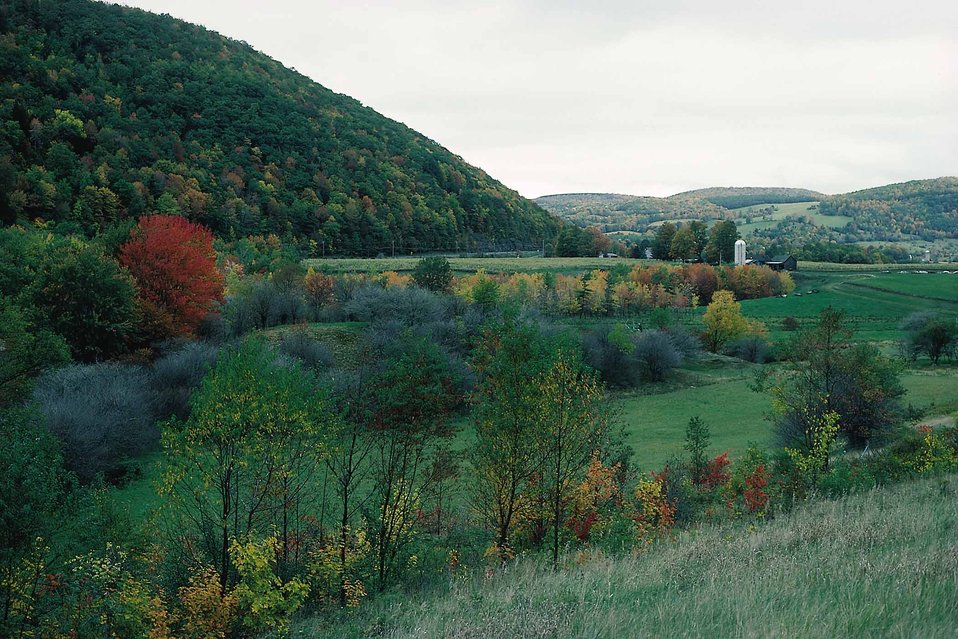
Wooded countryside in upstate New York.